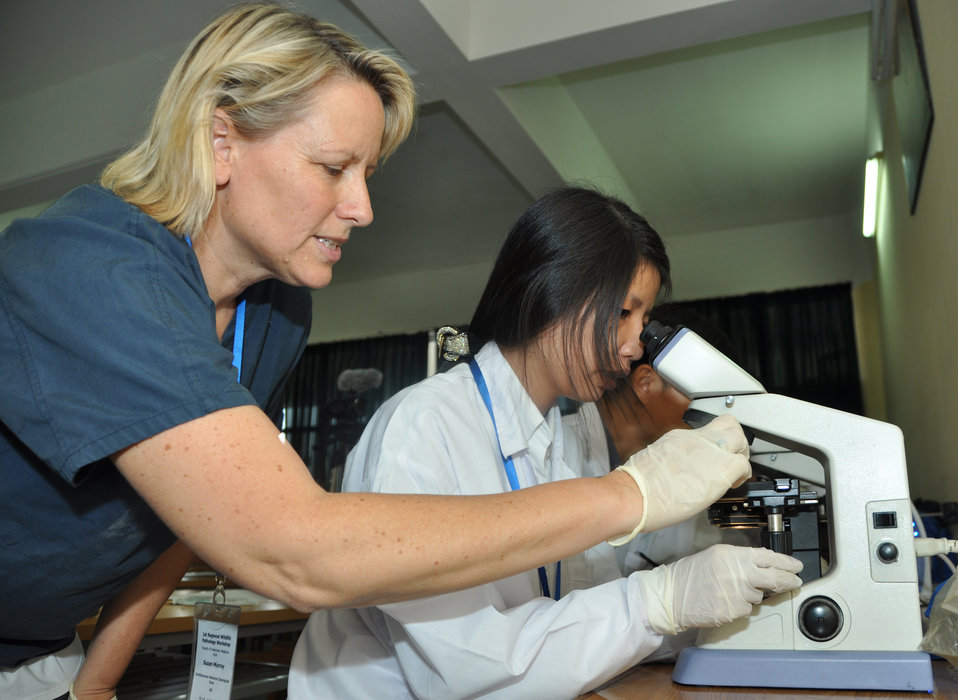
USAID EPT Smithsonian Pathology Training to Detect Emerging Infectious Diseases Wildlife and Other Animals in Vietnam Workshop